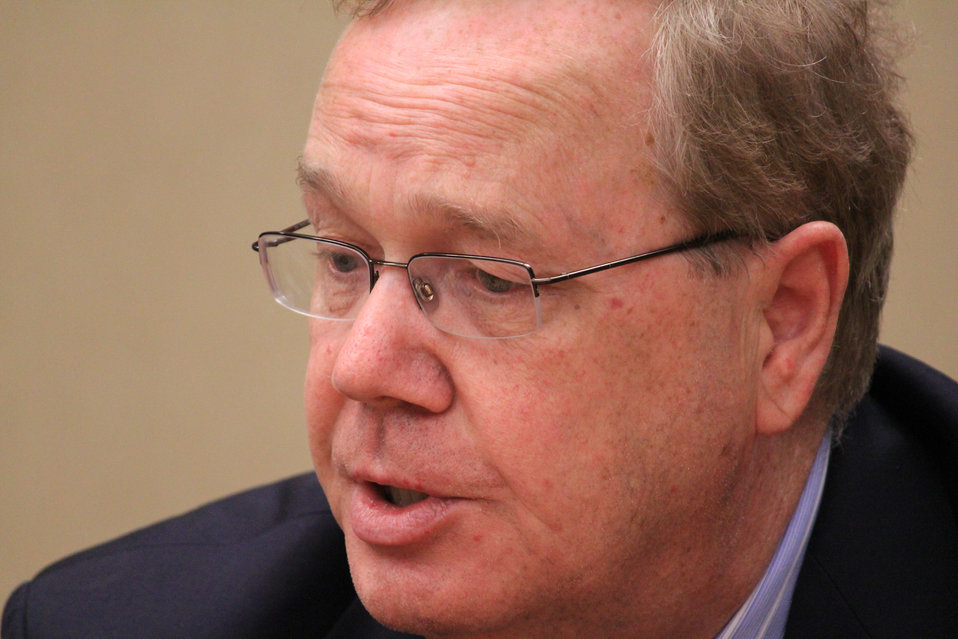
Agriculture Under Secretary for Rural Development (RD) Dallas Tonsanger announces the publication of the Federal Resources for Sustainable Rural Communities guide to the National Rural Economic Developers Association in Indianapolis, IN on Friday, July 20, 2012. This publication is a collaborative effort of the U.S. Department of Agriculture (USDA), the U.S. Department of Housing and Urban Development HUD), the U.S. Department of Transportation (DOT) and the U.S. Environmental Protection Agency (EPA). The guide outlines programs the federal government has available to support rural communities as they promote economic development and enhance the quality of life for rural residents.